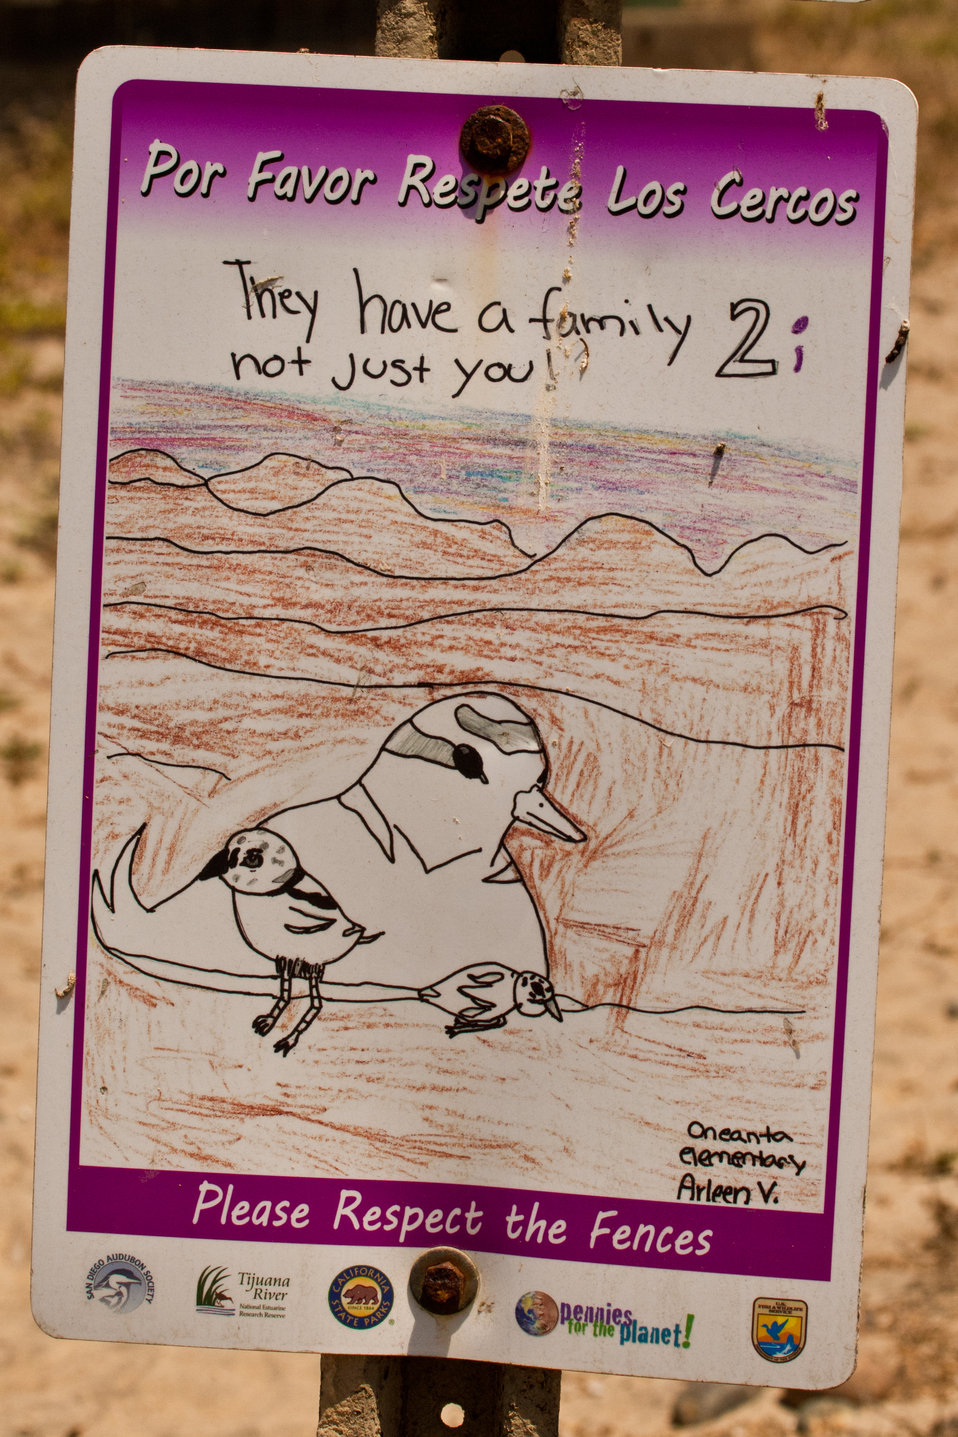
'Share the Shore' with our snowy plovers!

The 'Share the Shore' project in partnership with Audubon California made these wonderful signs possible to be posted on the Tijuana Slough NWR coastal dune habitat. The original refuge boundary signs were vandalized and not respected, however these signs drawn by local students and printed by Audubon, did the job, by protecting the nesting area for California Least terns and western snowy plovers. The signs were so well-respected and held up so well, that they were used the following year. The Refuge hopes to do this same activity for the San Diego Bay NWR in the future